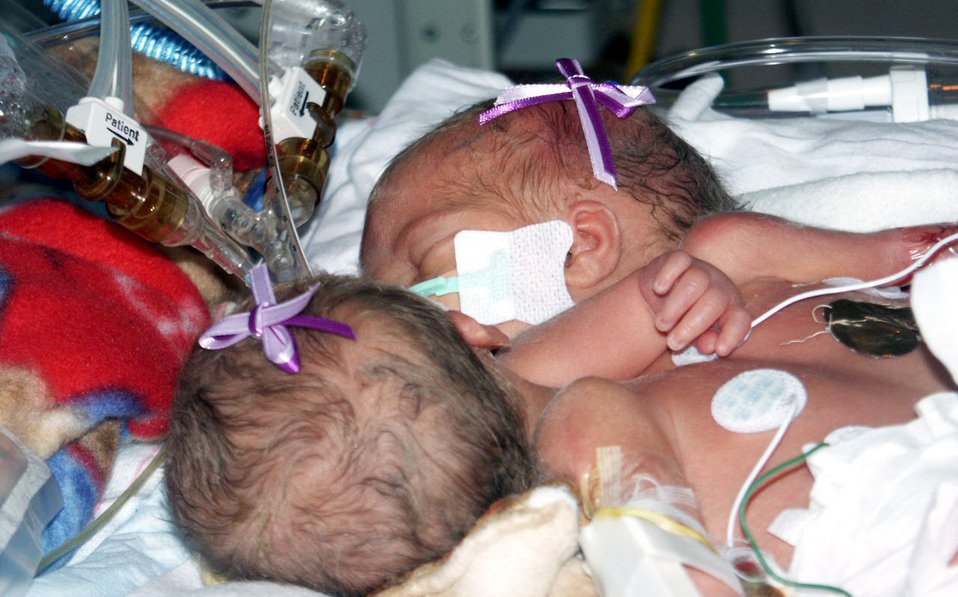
Conjoined twins

LACKLAND AIR FORCE BASE, Texas -- Conjoined twins Brynleigh (top) and Victoria Smith were born July 25 at Wilford Hall Medical Center here. They remain in the center's neonatal intensive care unit on ventilator support under constant observation.